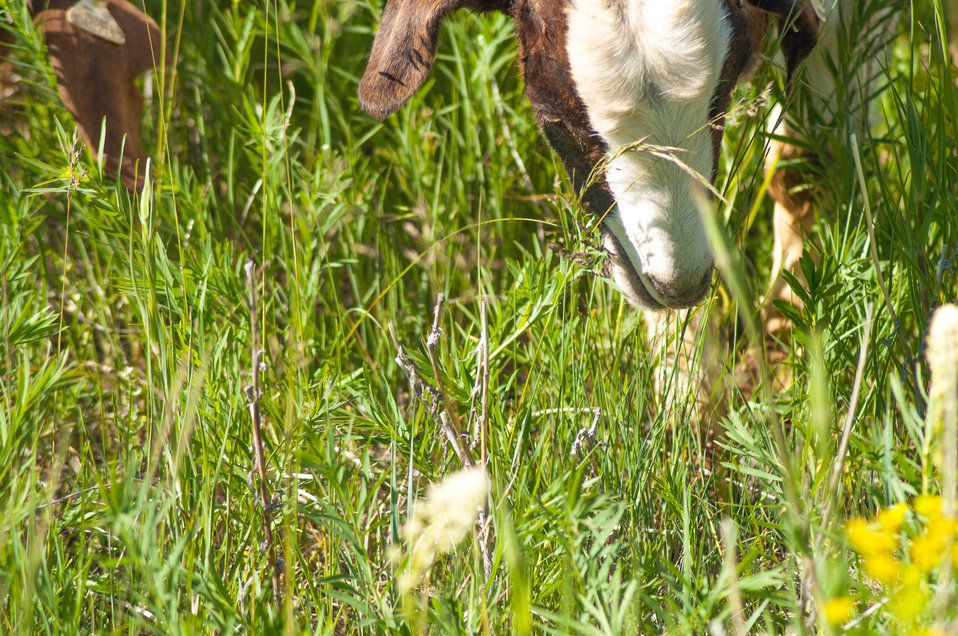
Goat landing on Bozeman Fish Technology Center

On June 8 at 5:00 p.m., 409 yearling domestic goats were off-loaded on the Bozeman Fish Technology Center (BFTC) campus. Thus begins a 3-4 year project of monitored targeted grazing and applications of friendly insects to control noxious weeds and manage brush overgrowth on property of the U.S. Fish and Wildlife Service BFTC.

Purposes of this effort are to reduce the presence of undesirable vegetation, promote restoration of native plants, and assist with fire protection by reducing burnable plant biomass.

The cooperative venture involves the U.S. Fish and Wildlife Service, Montana Outdoor Science School, Friends of the Bozeman Fish Technology Center, Gallatin Valley Land Trust, U.S. Forest Service, and Prescriptive Livestock Services. Integrated Weed Control is supplying the insects as an in-kind contribution to the project, and has applied insects on the BFTC’s 'hot spots' in previous years.